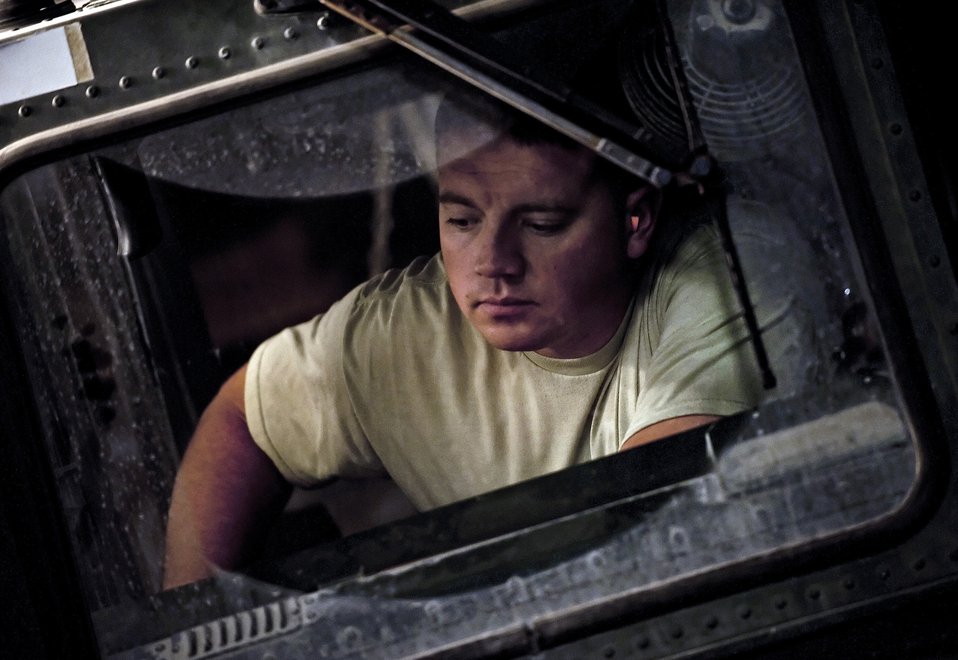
Preparing a special delivery

A member of the 8th Expeditionary Air Mobility Squadron at an air base in Southwest Asia drives a cargo loader into place March 5, 2011, to load supplies onto a C-17 Globemaster III for an air delivery mission to a remote forward operating base in Afghanistan.